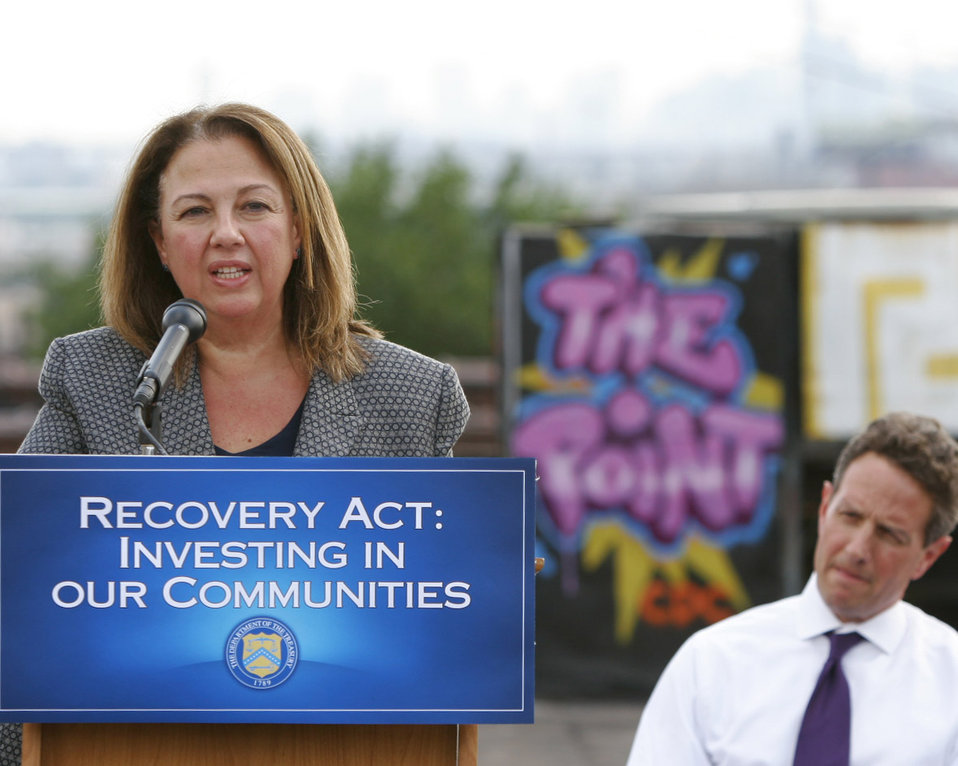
The Point: June 29, 2009

Paloma Izquierdo-Hernandez, President and CEO of Urban Health Plan, a federally qualified health center, speaking at The Point.